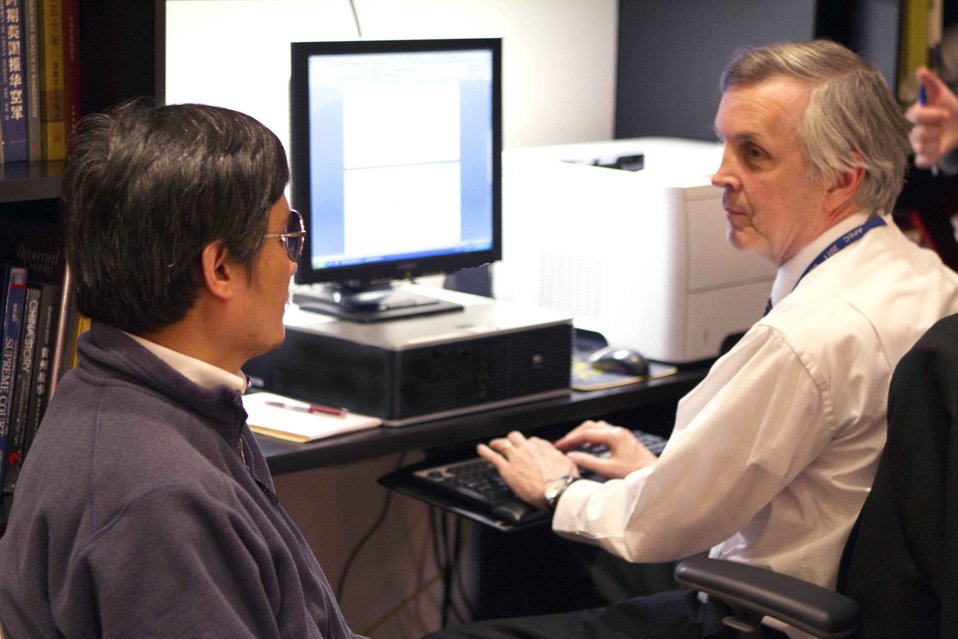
U.S. Official With Chen Guangcheng

Chen Guangcheng meets with a U.S. official at the U.S. Embassy in Beijing, China, on May 1, 2012.